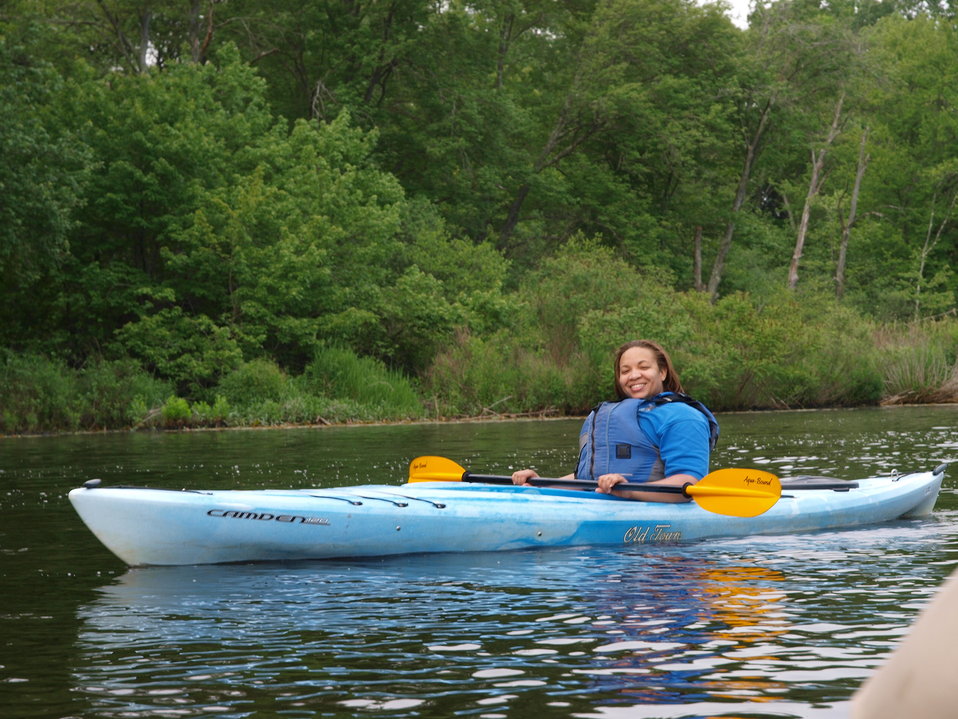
Kayaking!

Daffny posing.